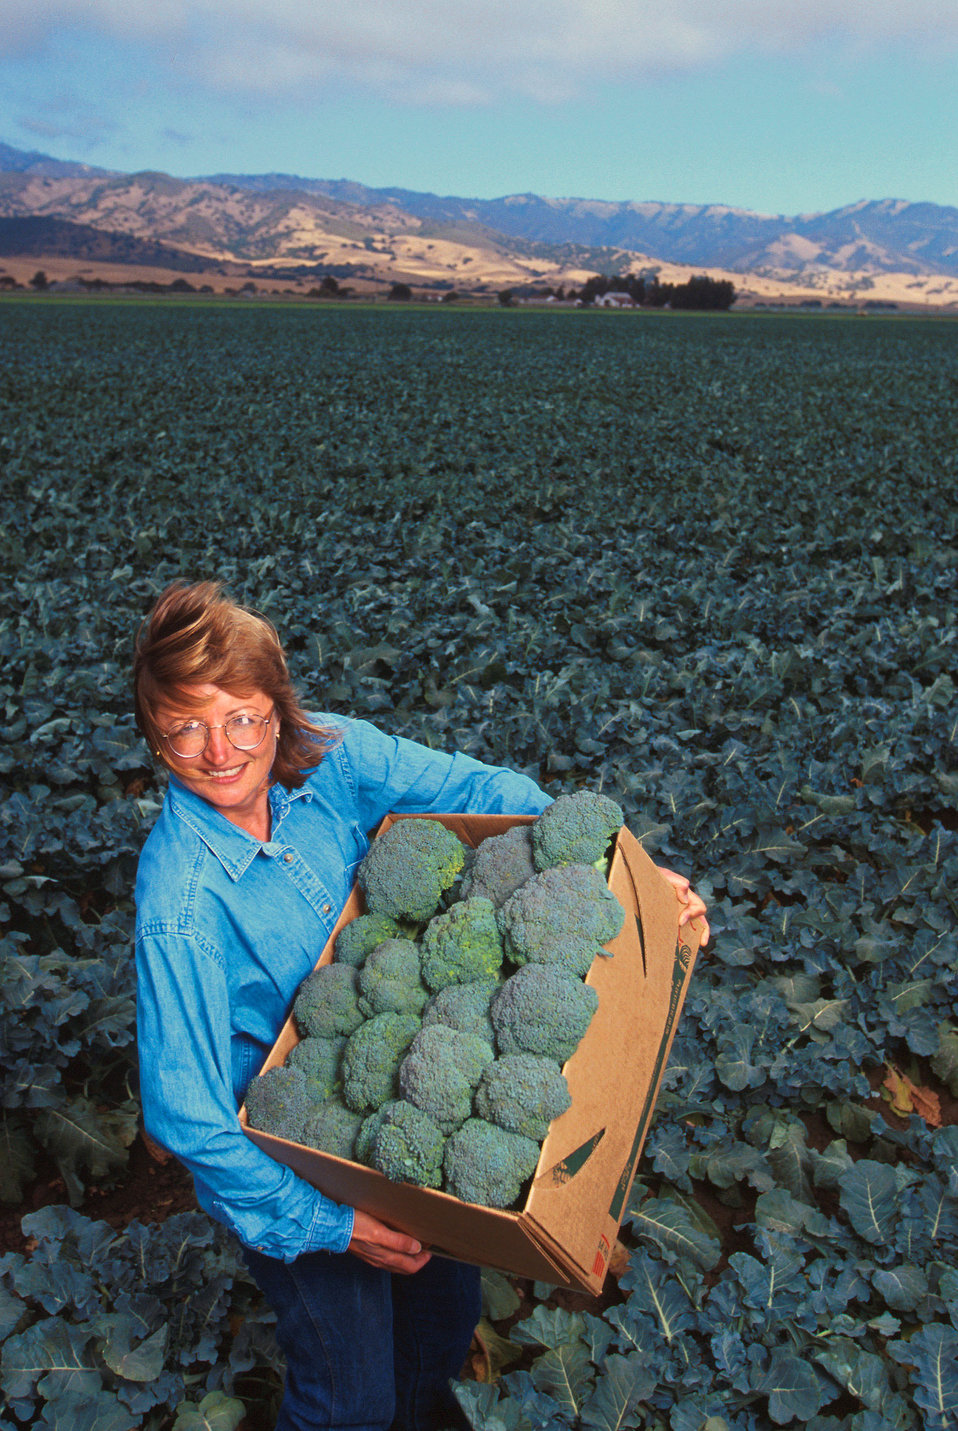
U.S. Department of Agriculture (USDA) Agricultural Research Service (ARS) agronomist Sharon Benzen displays test-plot-grown broccoli that will be used to determine pesticide residue levels in Salinas, CA. The interagency IR-4 program ensures the safety of so-called minor-use chemicals before they are approved for commercial agricultural production.